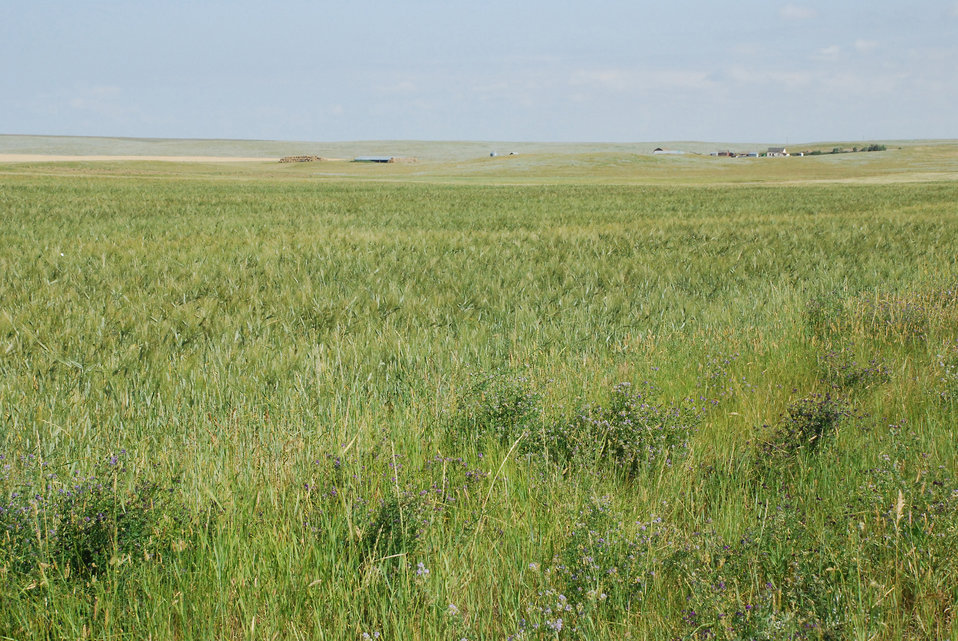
Organic 003

Patches of flowers attract pollinators to Vilicus Farms in Havre, MT. The flower patches aid in the pollination of the crops on the farm.